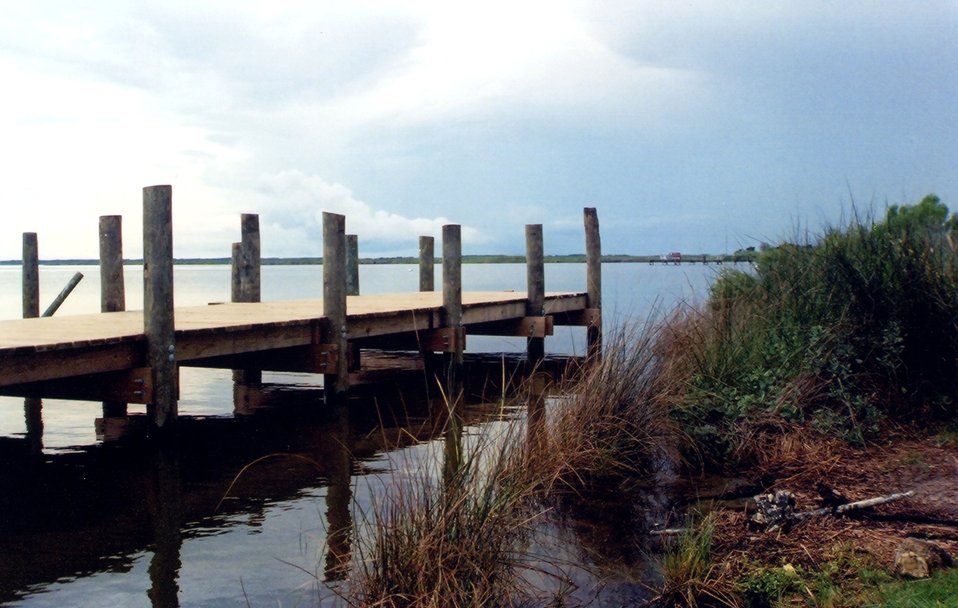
A pier on the Albemarle Sound side of the outer banks.